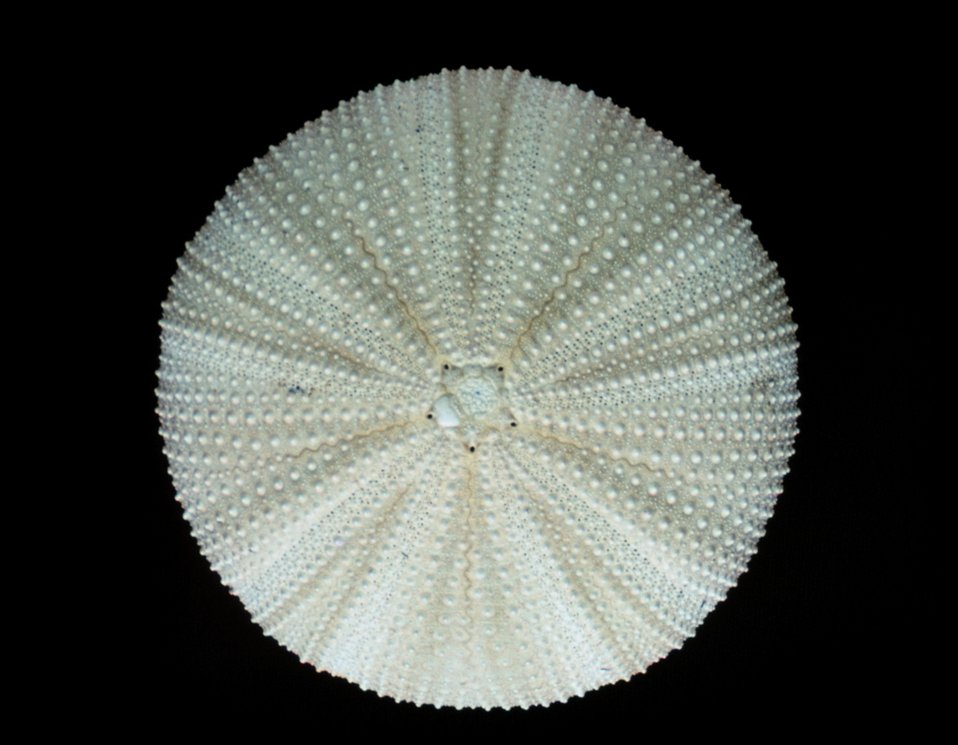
Sea urchin, dorsal view of test.